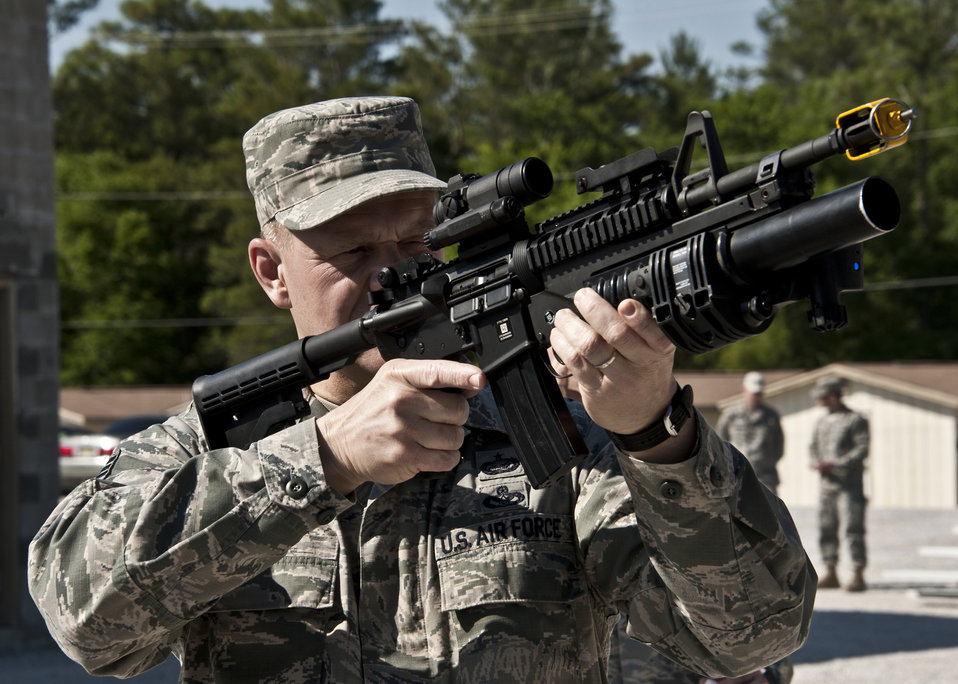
Brave Defender

Chief Master Sgt. of the Air Force James A. Roy peers through the sights of an M-4 carbine rifle May 6, 2011, at Eglin Air Force Base, Fla. Chief Roy received a hands-on tour of Air Force Materiel Command's